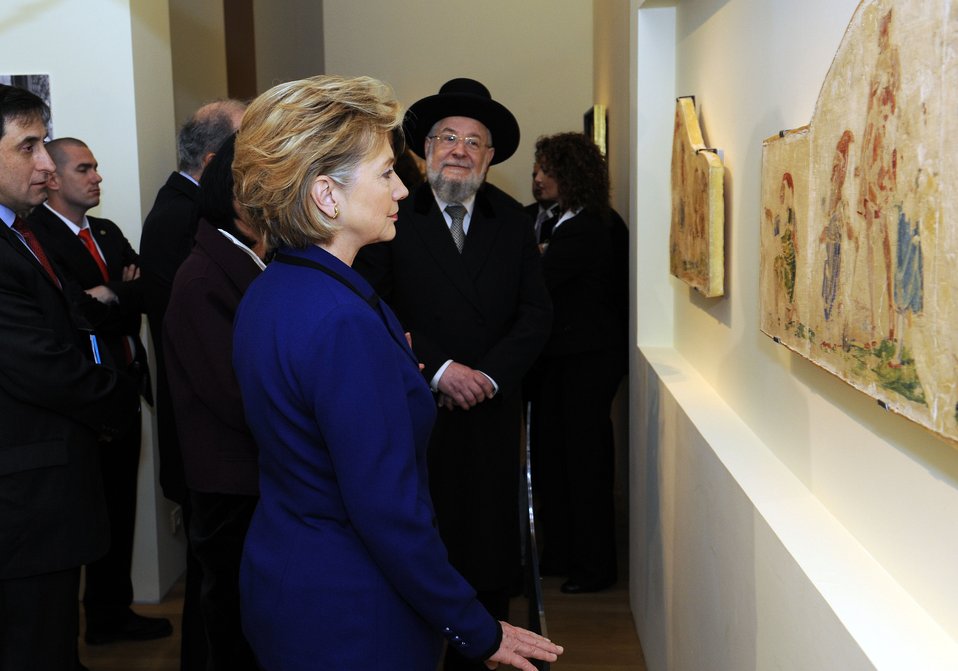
Secretary Clinton Visits Holocaust Art Museum

U.S. Secretary of State Hillary Clinton visited the new Bruno Schulz display, Wall Painting under Coercion, in the Holocaust Art Museum, guided by Director of the Museums Division Yehudit Inbar and Senior Art Curator Yehudit Shendar and accompanied by Chief Rabbi Lau, Yad Vashem Council Chairman, and Middle East Special Envoy Senator George Mitchell in Jerusalem March 3, 2009